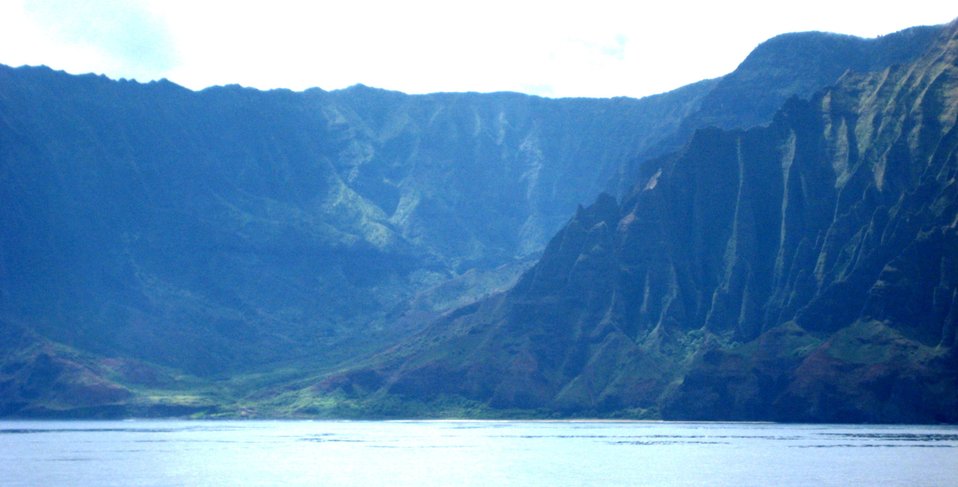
A view from offshore of the Na Pali coast, along the northwest shore of Kauai.